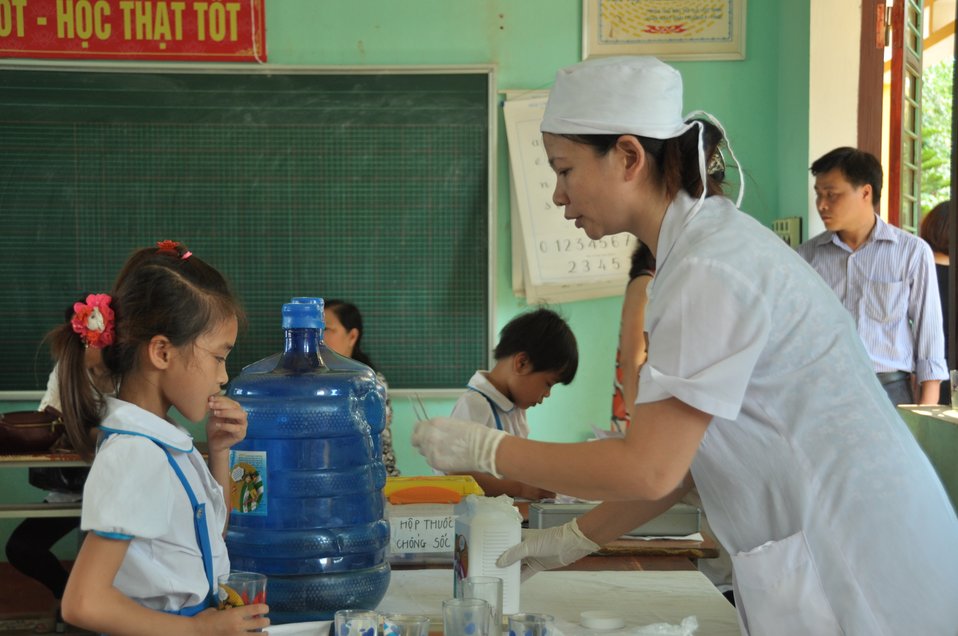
USAID supports deworming education and medication distribution in Bac Giang Province

May 20, 2013